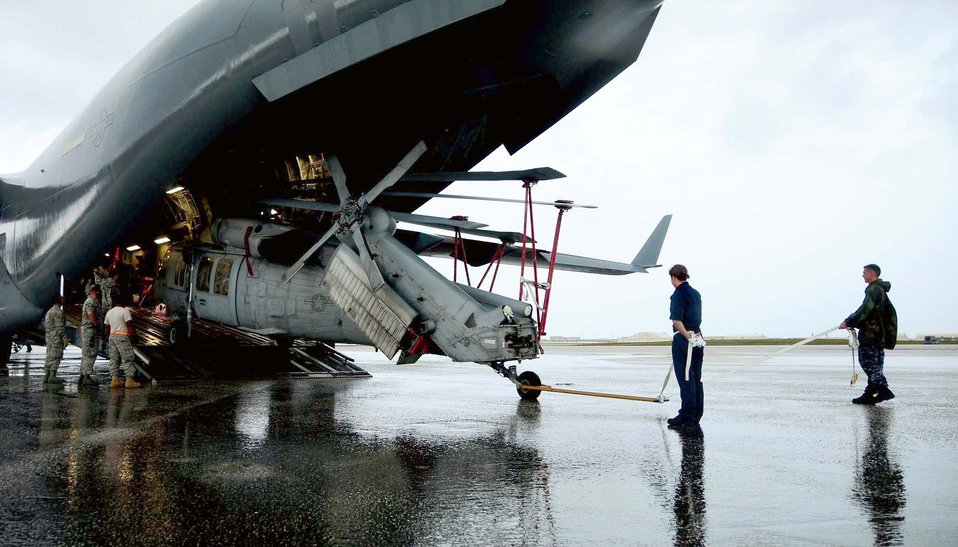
Don't drop that boom

Airmen at Andersen Air Force Base, Guam, work with the crew from Helicopter Sea Combat Squadron 25 to unload two Navy MH-60S Knighthawks from a C-17 Globemaster III June 23, 2010. The aircraft arrived as part of an air asset rotation.